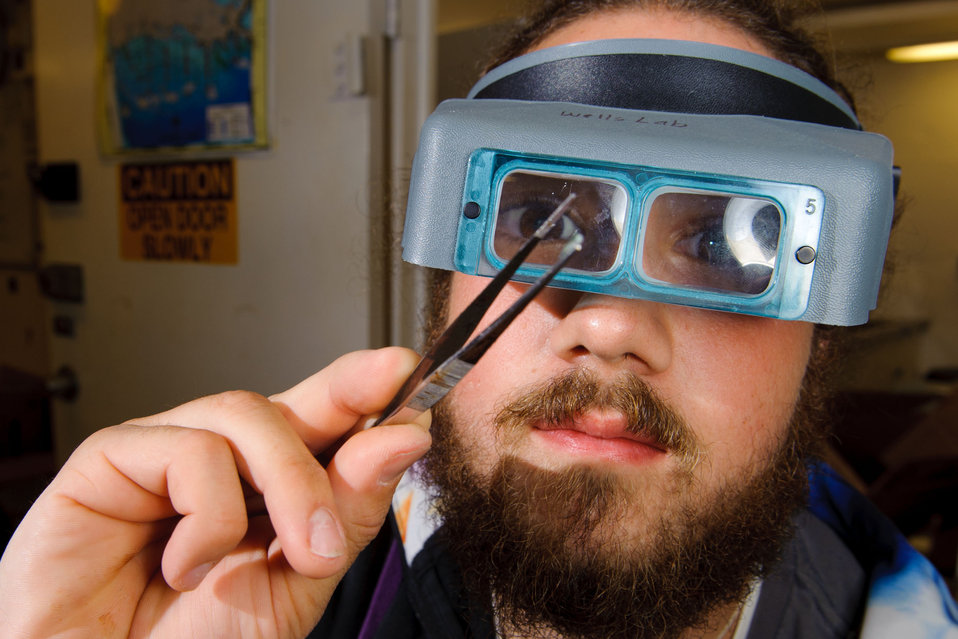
August 5, 2011 Enjoy the view of a macroinvertebrate!

If they can see... I'm guessing this is pretty close to their perspective.